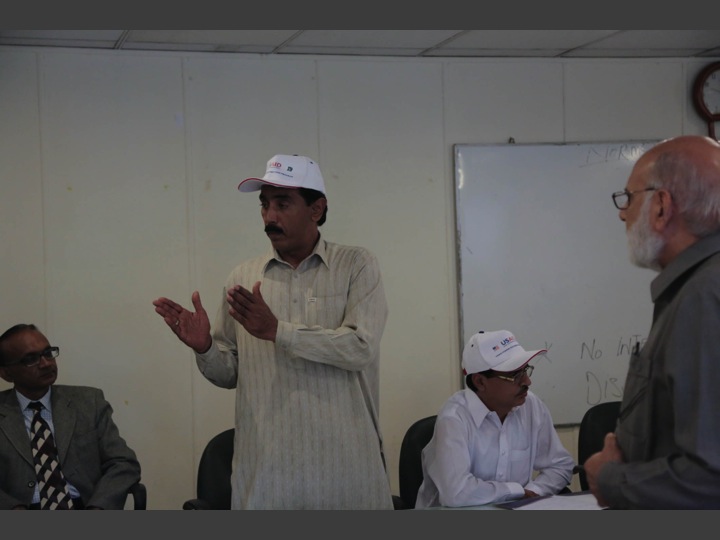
Linemen Training seeion in progress